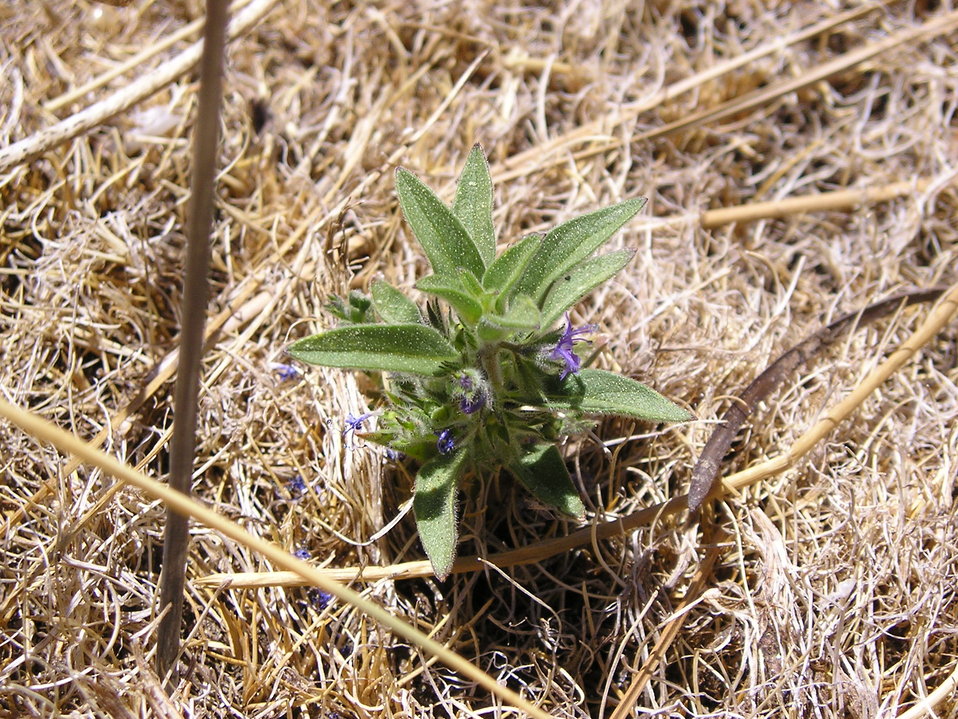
Hidden Lake bluecurls plant

Hidden Lake bluecurls is a federally threatened plant found only at Hidden Lake in Mount San Jacinto State Park in the San Jacinto Mountains, Riverside County, California. It is a small, compact annual plant, approximately 4 inches tall.